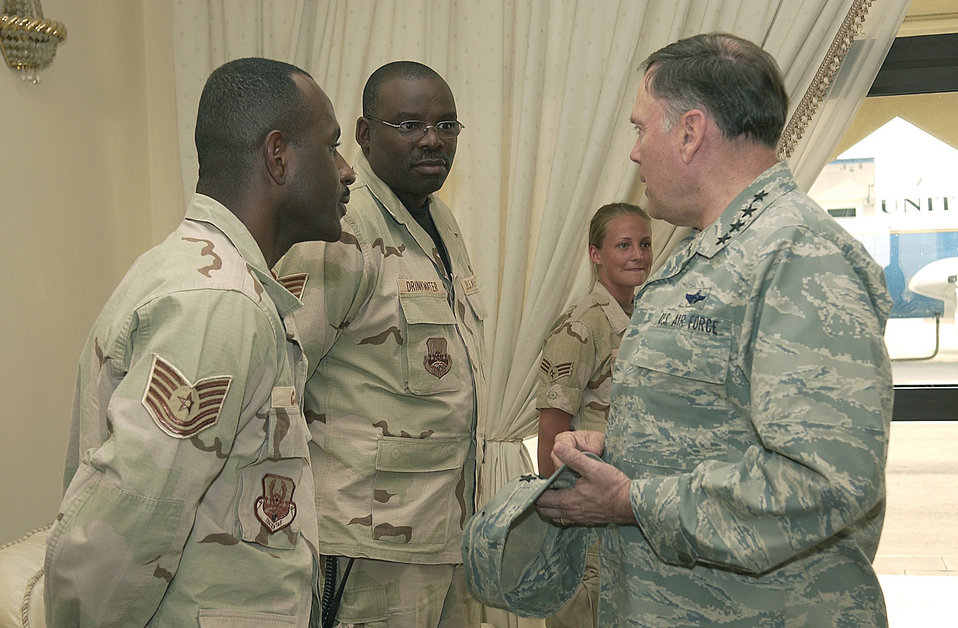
General Jumper commends CENTAF Airmen

SOUTHWEST ASIA -- Air Force Chief of Staff Gen. John P. Jumper speaks with Tech. Sgts. Kenneth Canada (left) and Ricky Drinkwater and Senior Airman Tiffany Luff at a forward-deployed location here recently. Sergeants Canada and Drinkwater are deployed from Maxwell Air Force Base, Ala., and Airman Luff is deployed from Robins Air Force Base, Ga. The reservists are assigned to the 8th Expeditionary Air Mobility Squadron.